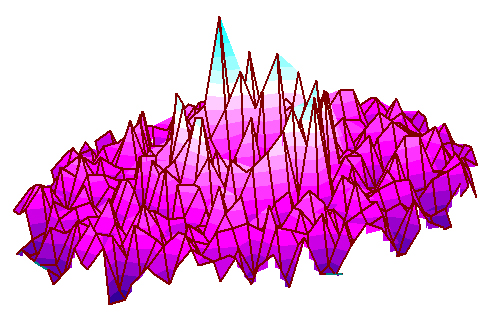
Molecular Modeling

Colorized simulation of what happens to 1100 carbon atoms in a 'flat' sheet of graphene about 20 microseconds after the central atom is moved slightly upwards. Darker violet colors indicate atoms that have dropped below their original position, whereas the lighter green colors show where atoms have risen.